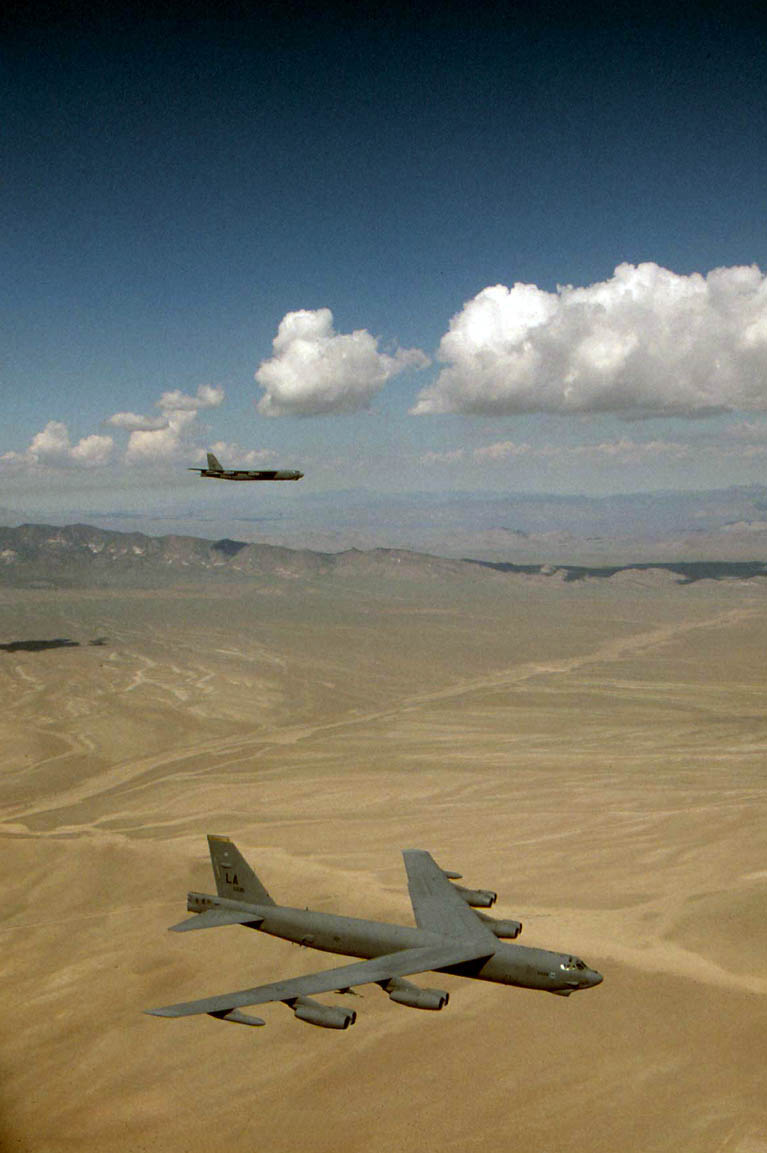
Heavy bomber

FILE PHOTO -- Air Combat Command's B-52 is a long-range, heavy bomber that can perform a variety of missions. The bomber is capable of flying at high subsonic speeds at altitudes up to 50,000 feet. It can carry nuclear or conventional ordnance with worldwide precision navigation capability. In a conventional conflict, the B-52 can perform air interdiction, offensive counter-air and maritime operations. During Desert Storm, B-52s delivered 40 percent of all the weapons dropped by coalition forces. It is highly effective when used for ocean surveillance, and can assist the U.S. Navy in anti-ship and mine-laying operations. Two B-52s, in two hours, can monitor 140,000 square miles of ocean surface.